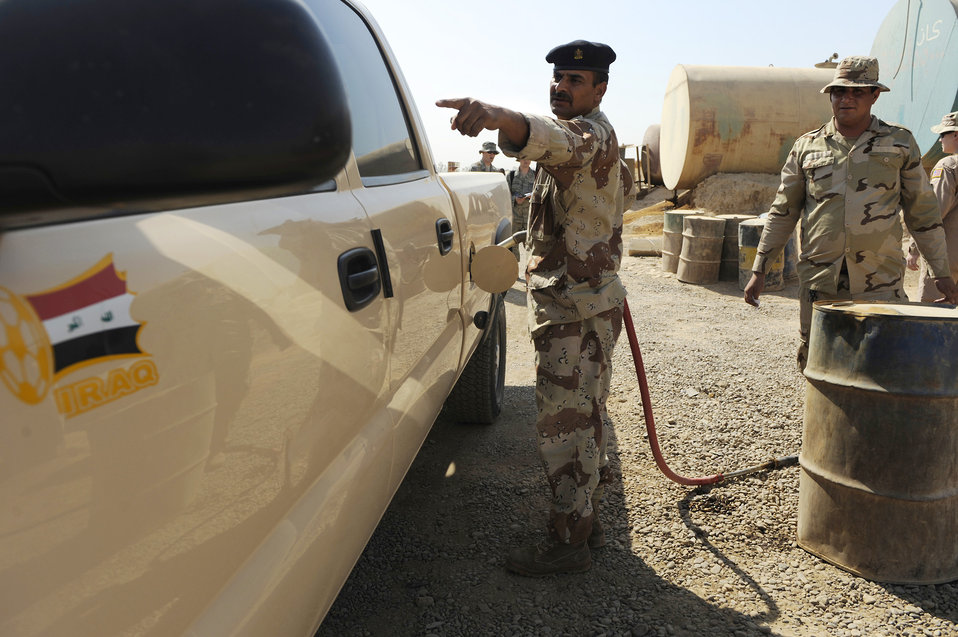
Airmen step back as Iraqis take control of mission support

Iraqi soldiers refuel their vehicles July 11 at Camp Taji, Iraq. The Iraqi fuels depot is run exclusively by the Iraqi army with some assistance from an American Airman assigned to the Logistics Military Adviser Team.